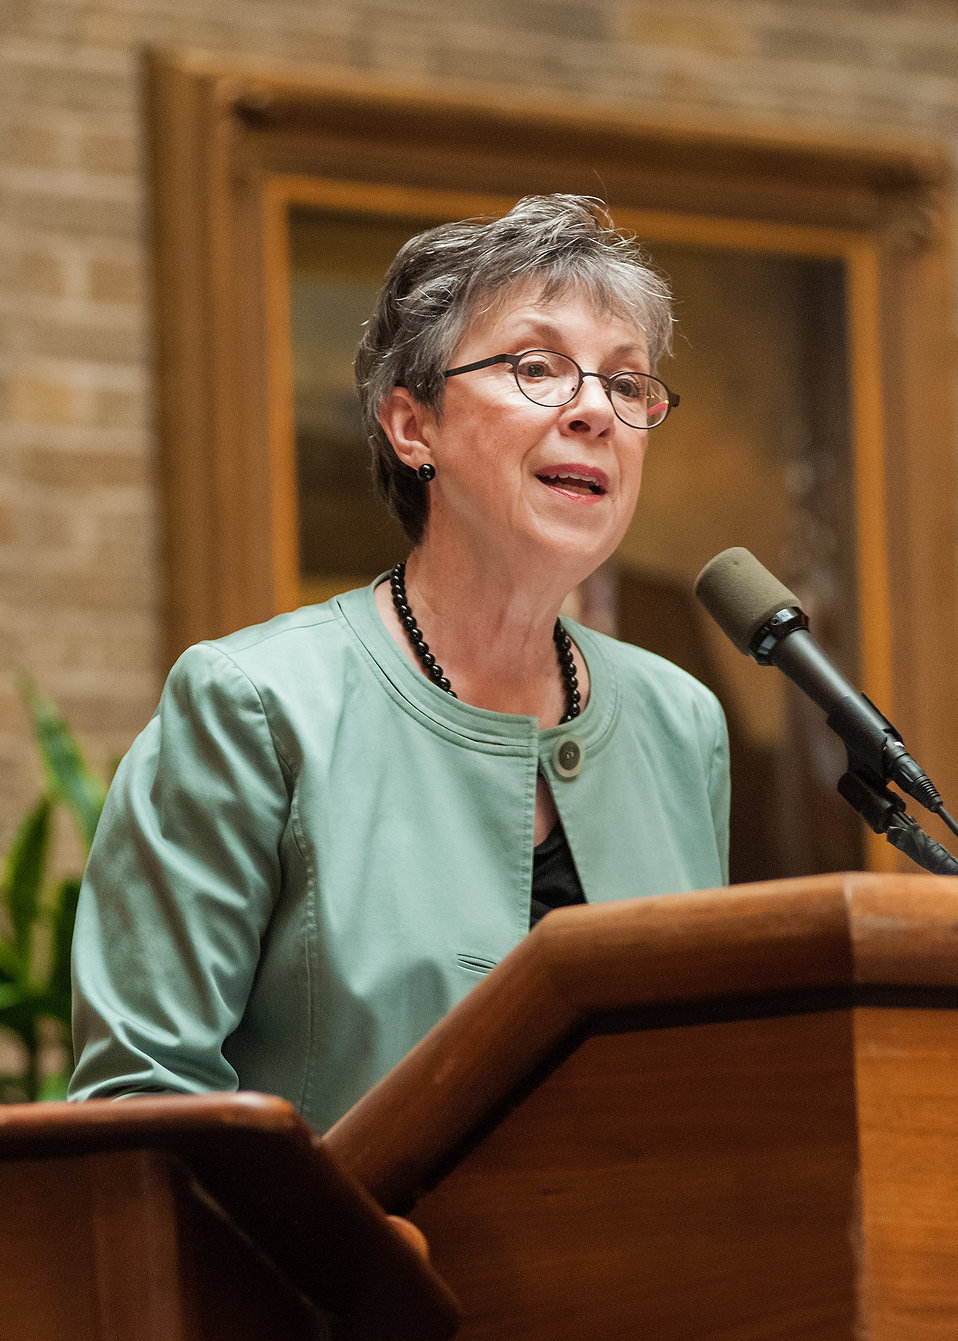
Agriculture Under Secretary for Research, Education and Economics (REE) Dr. Catherine Woteki welcomes participants to the U.S.-Israel Bio-Challenge Symposium at the U.S. Department of Agriculture (USDA) in Washington, D.C. on Thursday, Apr. 18, 2013.